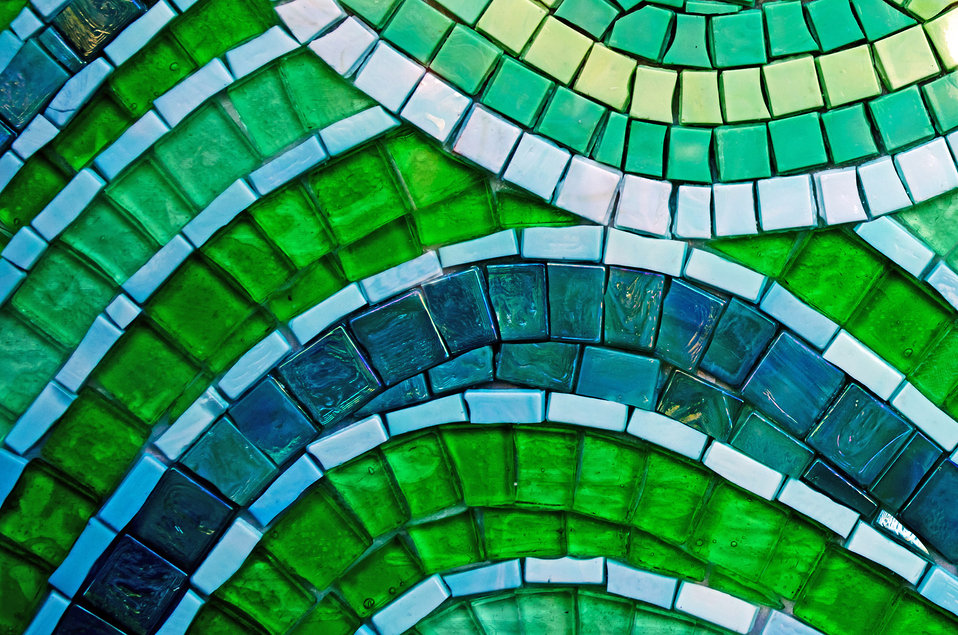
Green background.